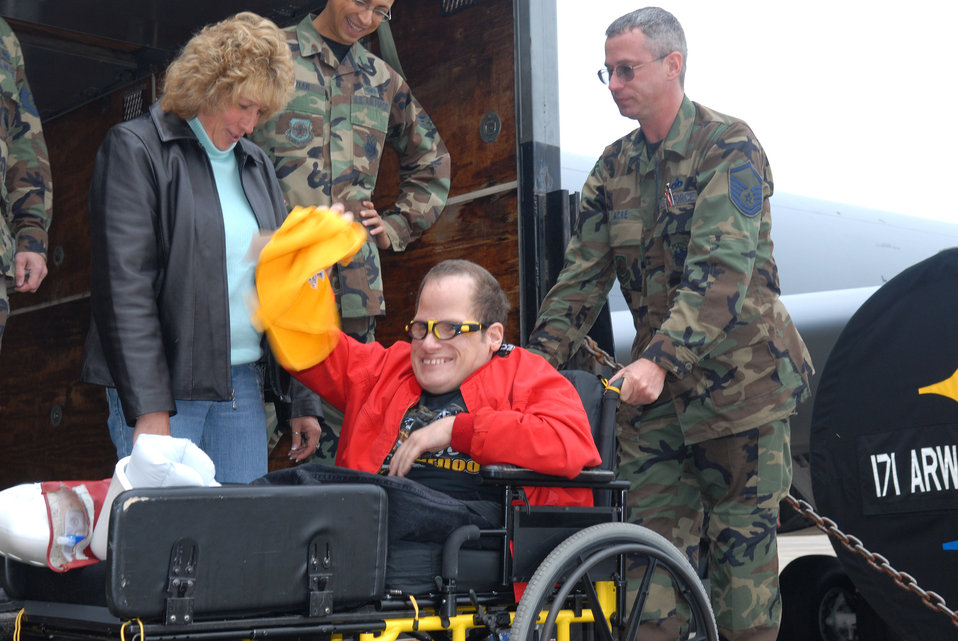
Air Guard unit shows off its 'Steel City Pride'

Master Sgt. Keith Acre helps Jimmy down from the lift truck after his tour of a KC-135 Stratotanker Oct. 18. Jimmy and other residents of nearby Allegheny Valley School along with members of the Pittsburgh Steelers football organization were on hand to help the Airmen of the Pennsylvania Air National Guard's 171st Air Refueling Wing christen the new